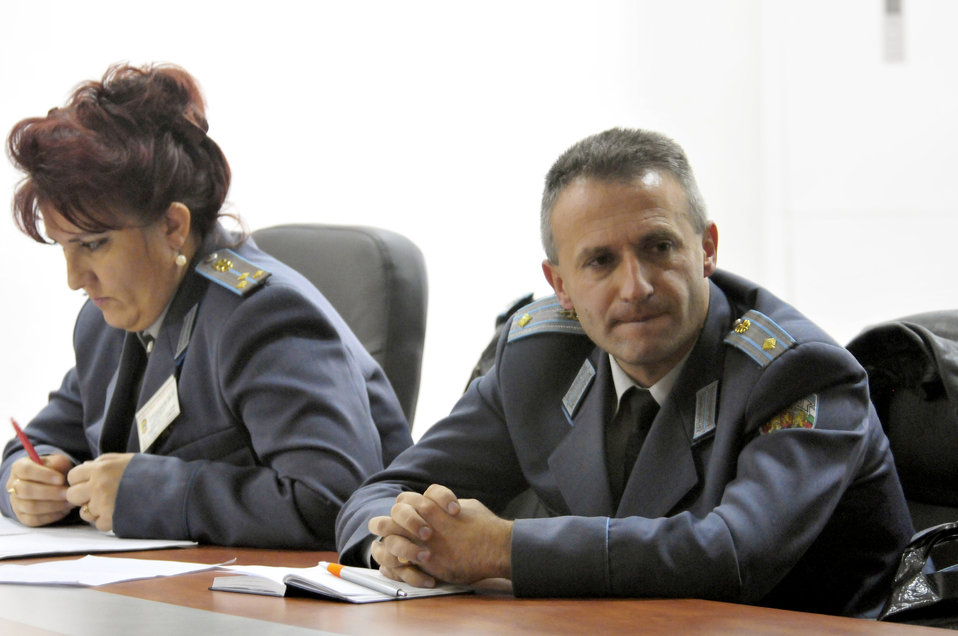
Fall Thracian 2010

Bulgarian air force officers attend a round-table discussion on the history and future of flight medicine during Exercise Thracian Fall 2010 Oct. 19, 2010, at Graf Ignatievo Air Base, Bulgaria. Airmen from U.S. Air Forces in Europe met for Thracian Fall 2010, an on-site training designed to build the partnership between the U.S. and Bulgarian air force.